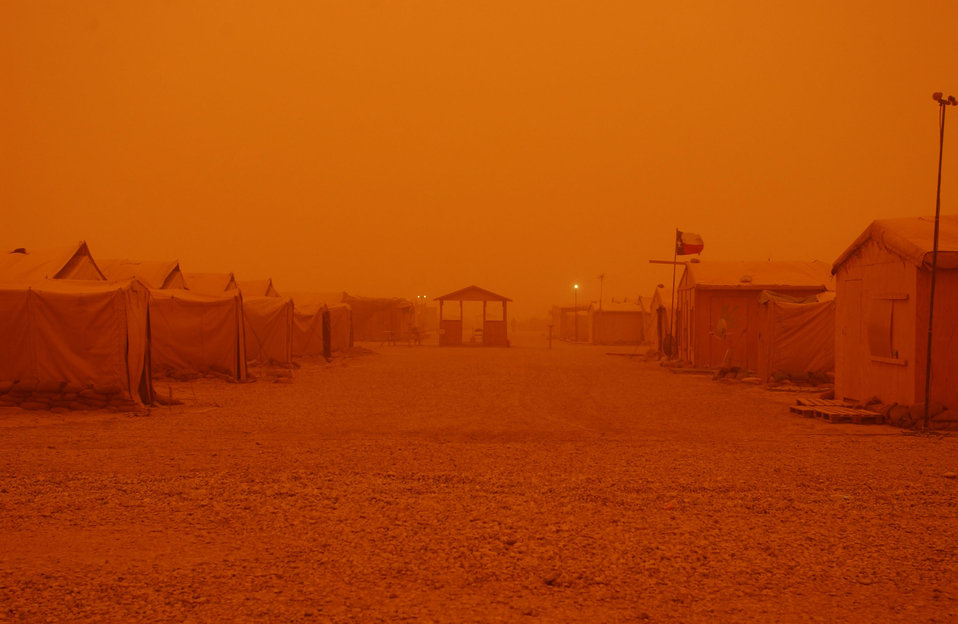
Hazy freedom

TALLIL AIR BASE, Iraq -- A sand storm blow through the base turning the sky a hazy yellow-orange color here May 5.